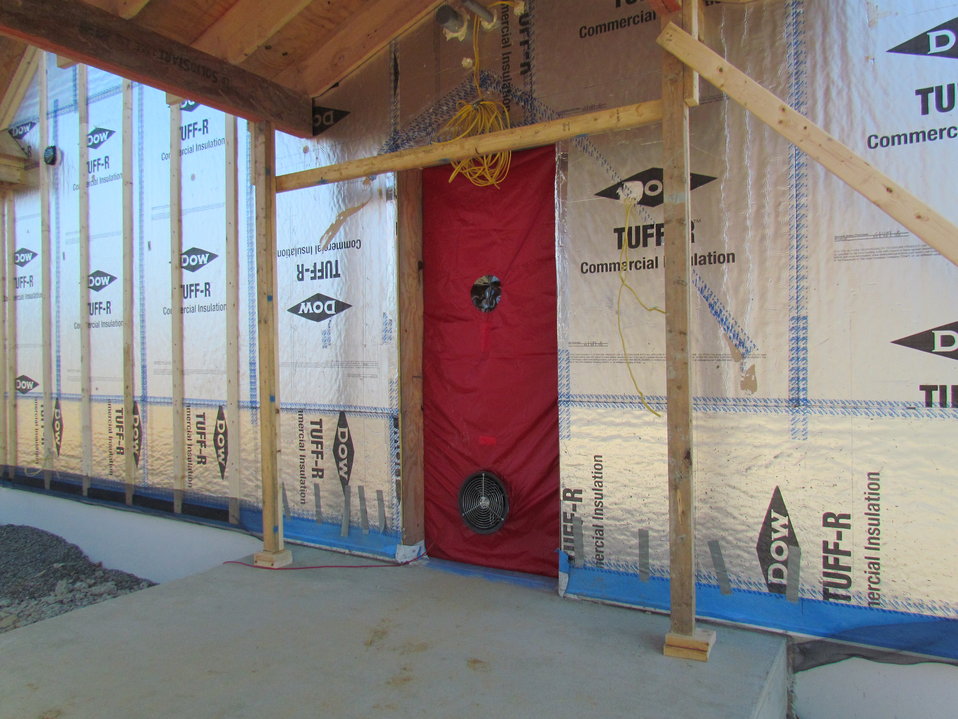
Net-Zero Energy Residential Test Facility – Photo showing blower door in place to measure the overall air leakage of facility with window, doors, and all other exterior penetrations in place.